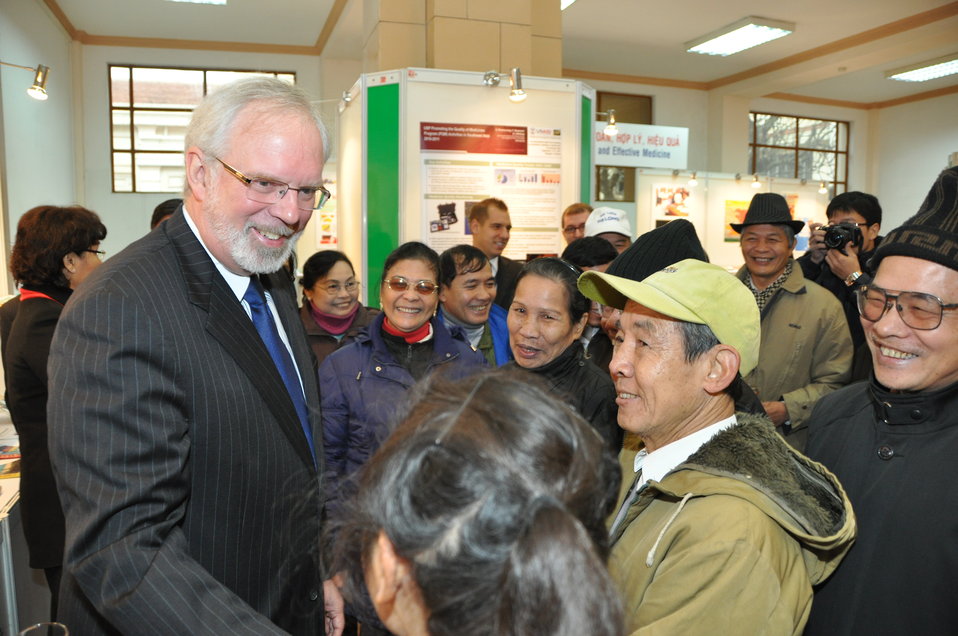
U.S. Ambassador David Shear opens safe medicine exhibition in Hanoi

Safe Medicine Exhibition